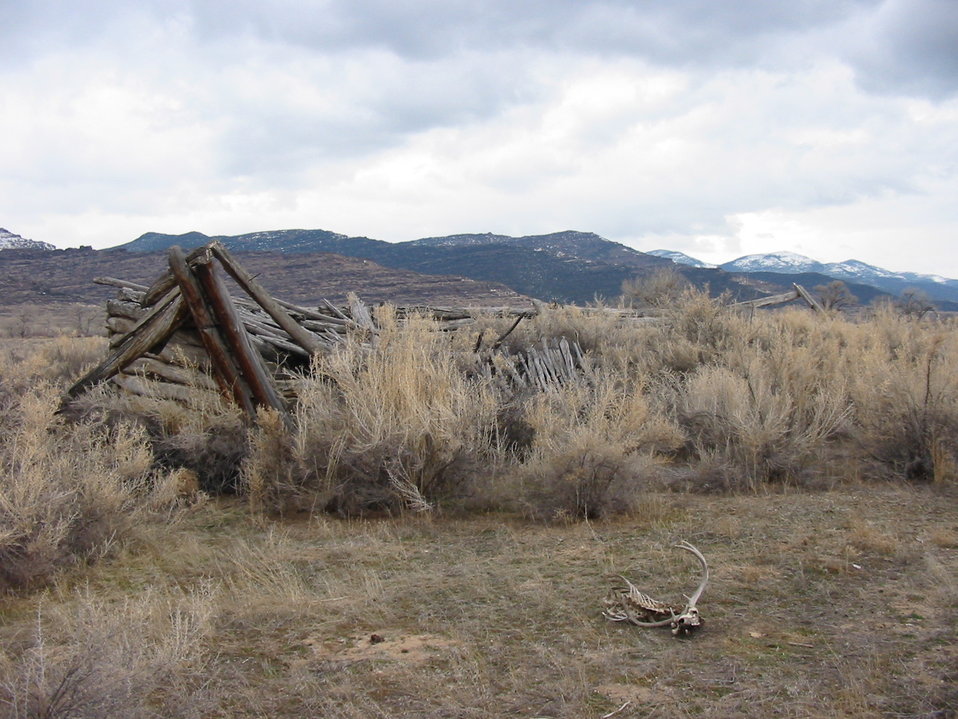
Thomas White-Two Bar Ranch

Remains of this 1887 homestead stand in Browns Park National Wildlife Refuge in Colorado. In the early 20th century, ranch owner Ora Haley was believed to have secretly hired outlaw Tom Horn to stop cattle rustling in the area. Steve McQueen starred in a 1980 movie about the matter.